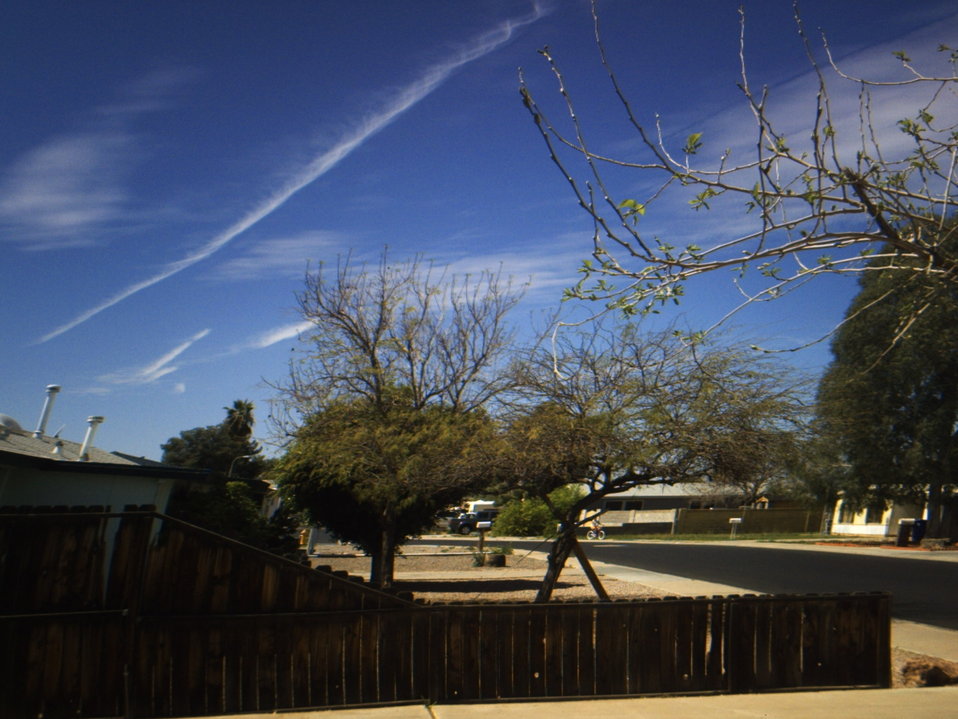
Uploaded by request of Susan Helms

Taken in Phoenix, Arizona

'Didn't know planes could leave a path thru the clouds''